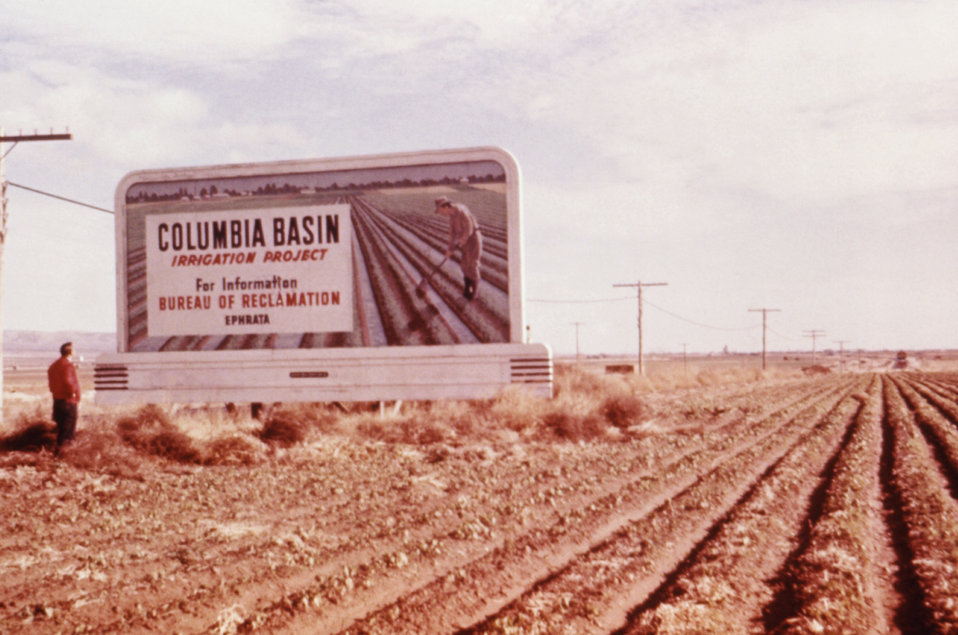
This 1976 photograph of a billboard in Oregon was advertising the Columbia Basin Irrigation Project.